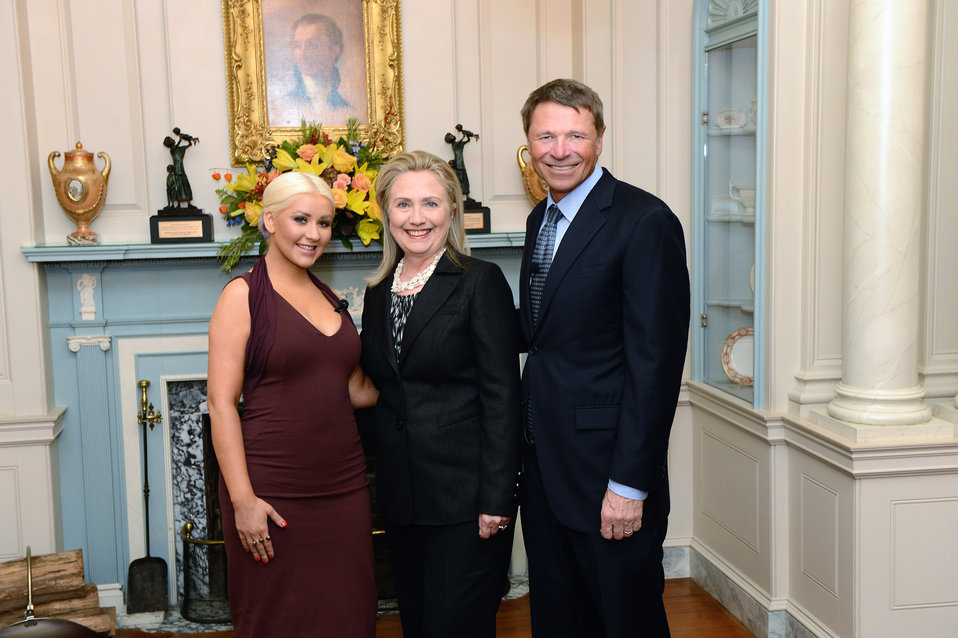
Secretary Clinton With David Novak and Christina Aguilera

U.S. Secretary of State Hillary Rodham Clinton poses for a photo with David Novak, Chairman and CEO of Yum! Brands, right; and Christina Aguilera, United Nations World Food Program (WFP) Ambassador Against Hunger, left; at the World Food Program-USA Awards Ceremony at the U.S. Department of State in Washington, D.C., October 3, 2012.